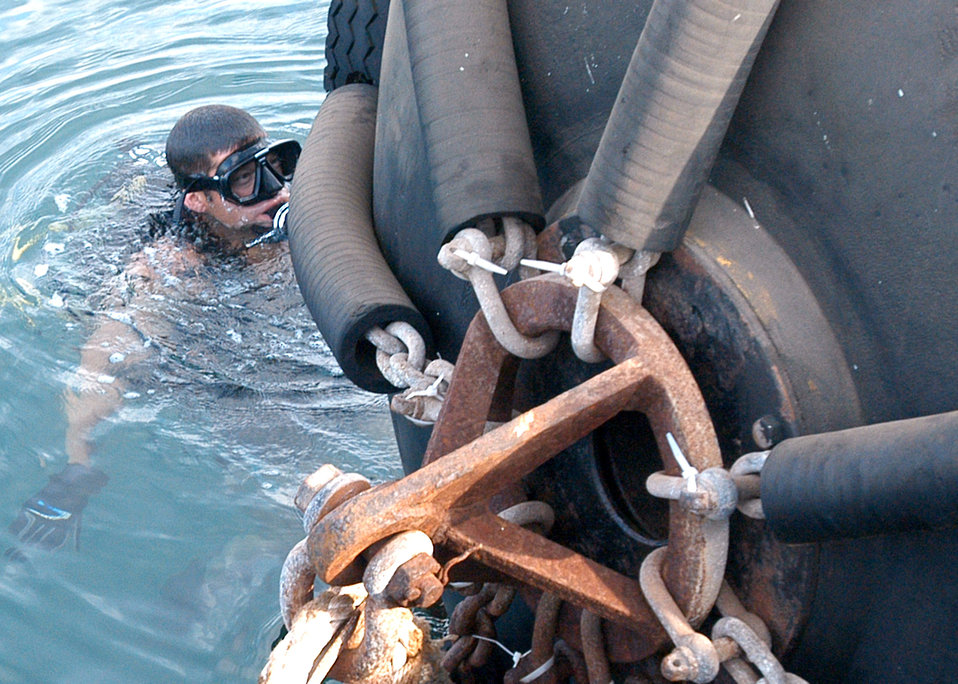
Airmen work to provide security for incoming vessels

Sean Robertson, a U.S. Navy explosive ordnance disposal chief, sweeps a buoy for explosive devices Oct. 15 as part of a joint procedure to secure a pier for an incoming naval ship at the port in Djibouti City, Djibouti.